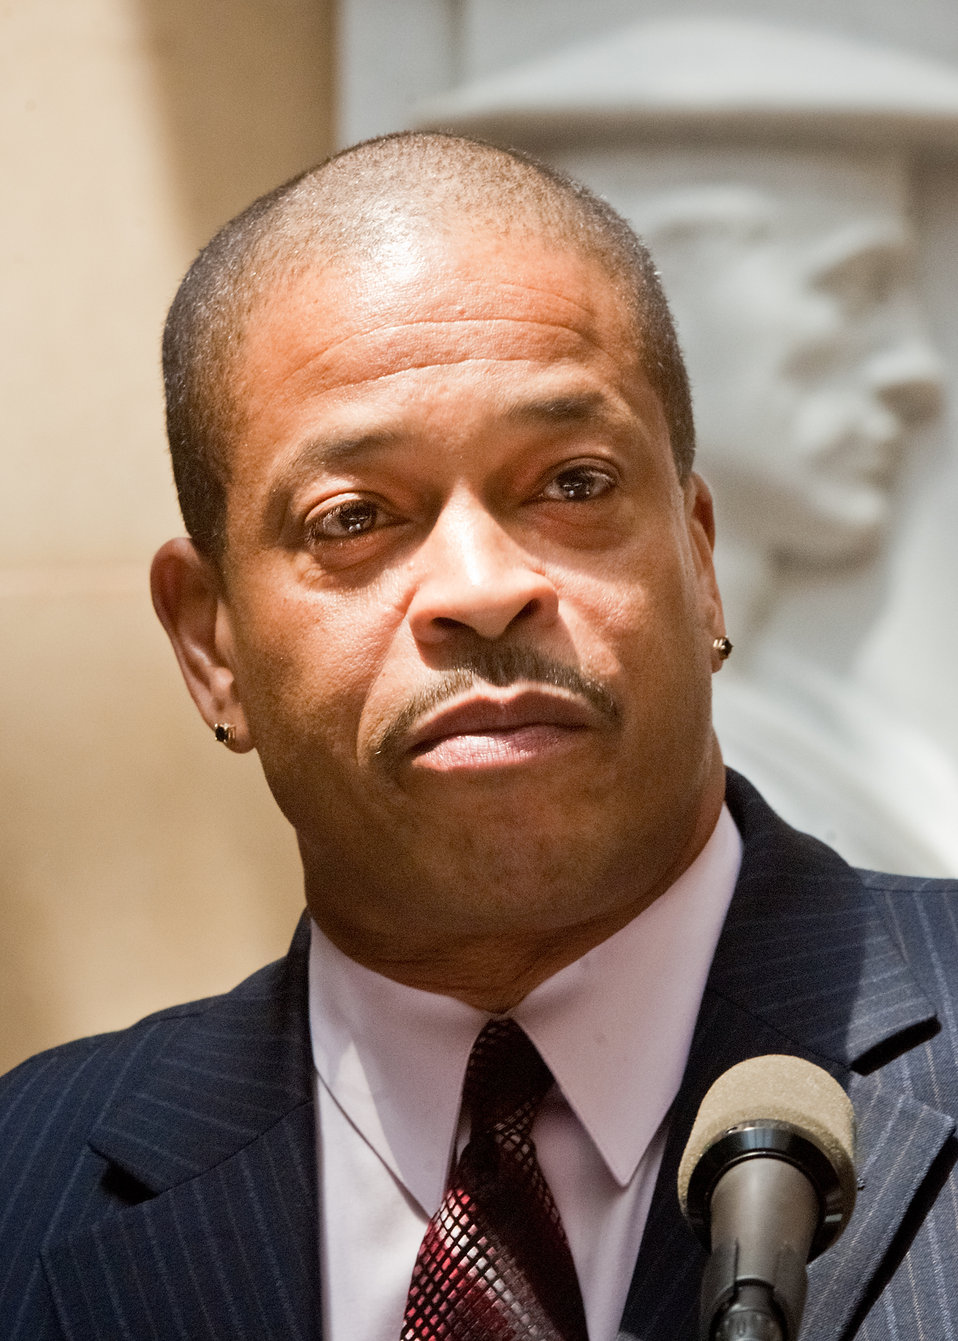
Billy Milton, Jr., Deputy Director, Office of Human Resources Management, Departmental Management describes the advantages and cost benefits to employees and the Department of Agriculture during a “Telework Program Party/Brown Bag” event on the patio of the Jamie Whitten Building of United States Department of Agriculture, in Washington, DC, on Tuesday, June 7, 2011. The event included an interactive telework panel and exhibits from the field of telework, telecommuting and mobile work environments. The event was open to all USDA employees, supervisors, managers, human resources staff and USDA telework program coordinators.